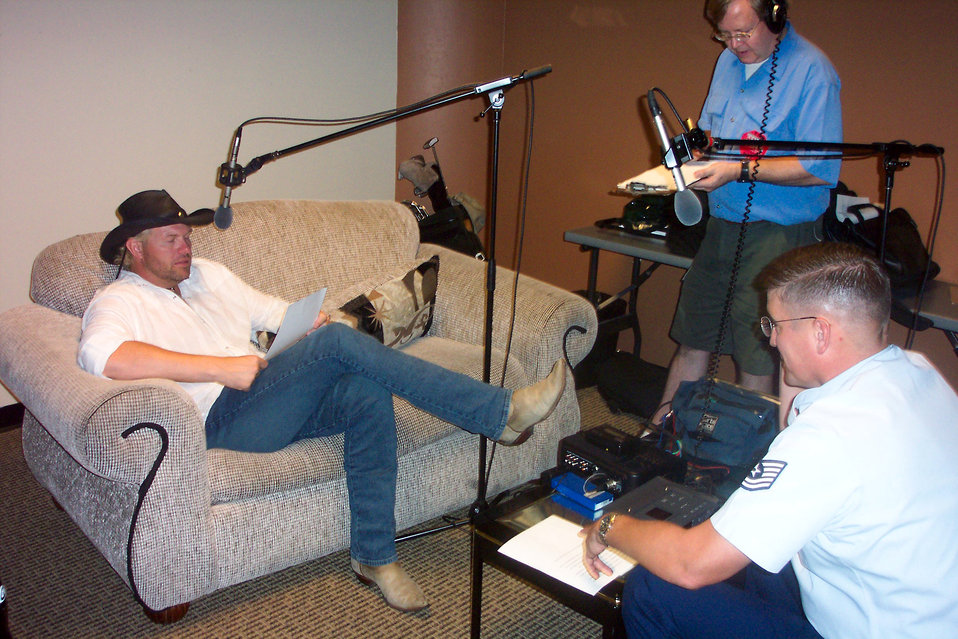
Keith featured on Air Force holiday CD

SELMA, Texas -- (Left to right) Country music star Toby Keith, David Rogers and Master Sgt. Gary Quesenberry, record the interview segment of the Red, White and Air Force Blue holiday compact disc here. Quesenberry is a broadcaster for the Air Force Recruiting Service.